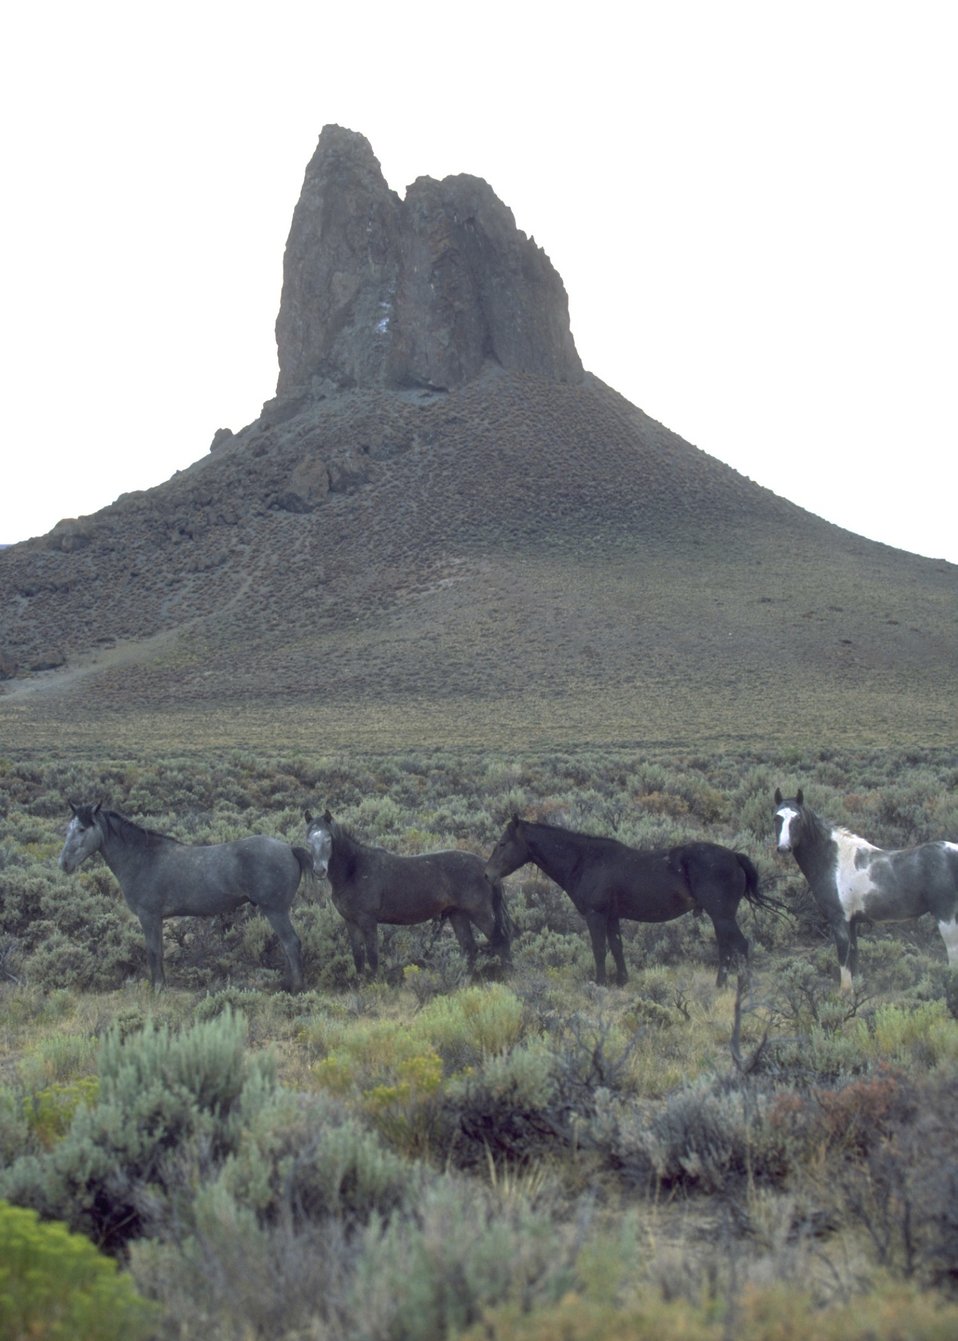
Wild Horses and Boar's Tusk, Rock Springs Field Office.